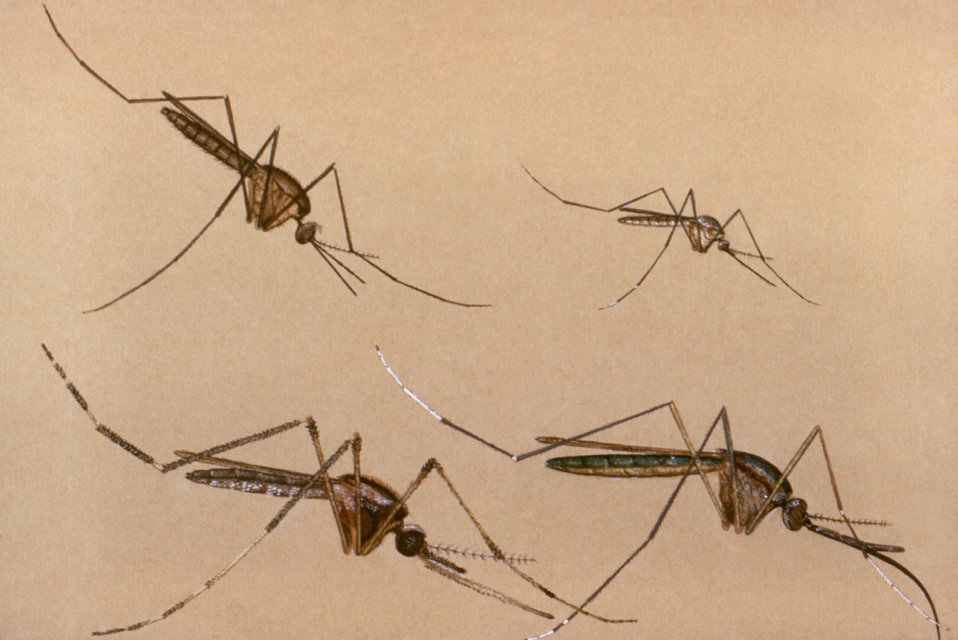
This illustration of four mosquitoes shows that these bloodsucking insects vary in size, and assume different resting positions.